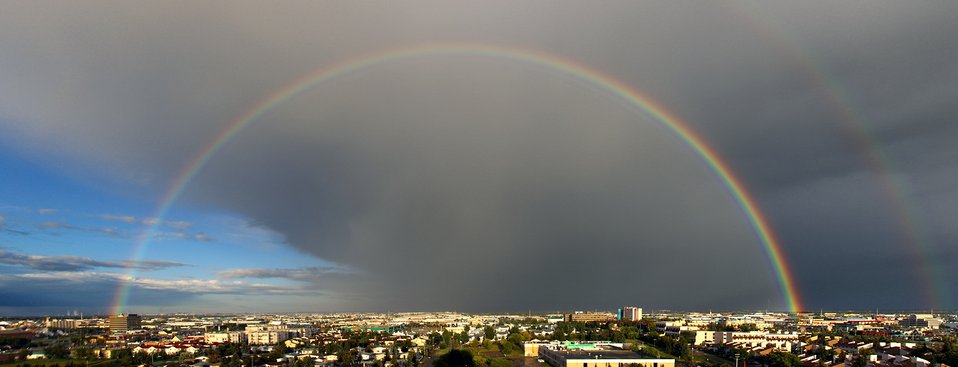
Panoramic picture of a full rainbow over the city of Edmonton, Alberta.